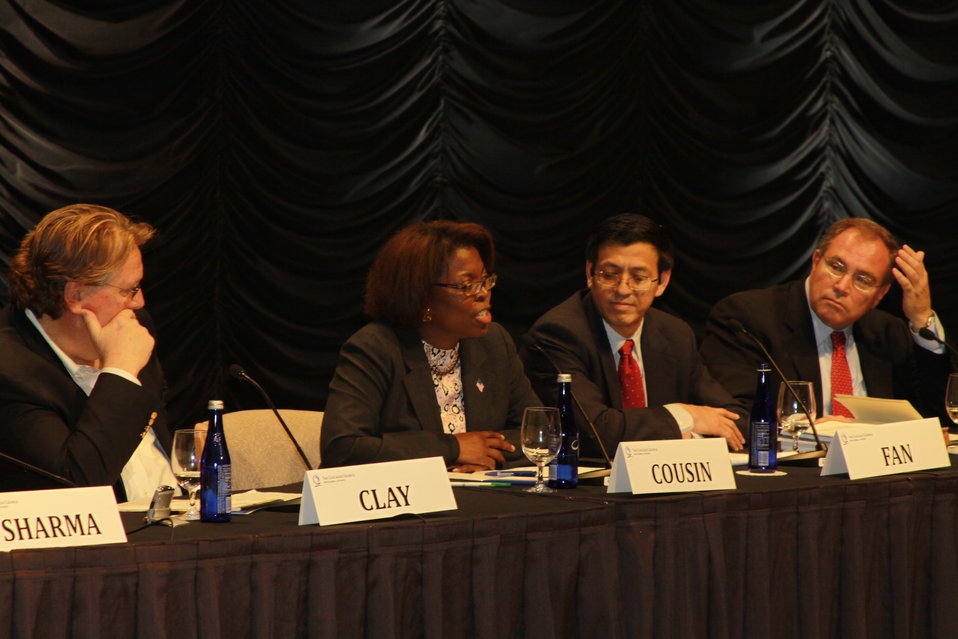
Panel Participants Discuss Global Agriculture and Food Security

Jason Clay, Senior Vice President Market Transformation, World Wildlife Fund; Ertharin Cousin, U.S. Ambassador to the UN Agencies in Rome; Shenggen Fan, Director General, International Food Policy Research Institute; Derek Yach, Senior Vice President, Global Health and Agriculture Policy at PepsiCo; participate in a panel discussion at the Chicago Council on Global Affairs' Symposium on Global Agriculture and Food Security in Washington, D.C., on May 24, 2011.